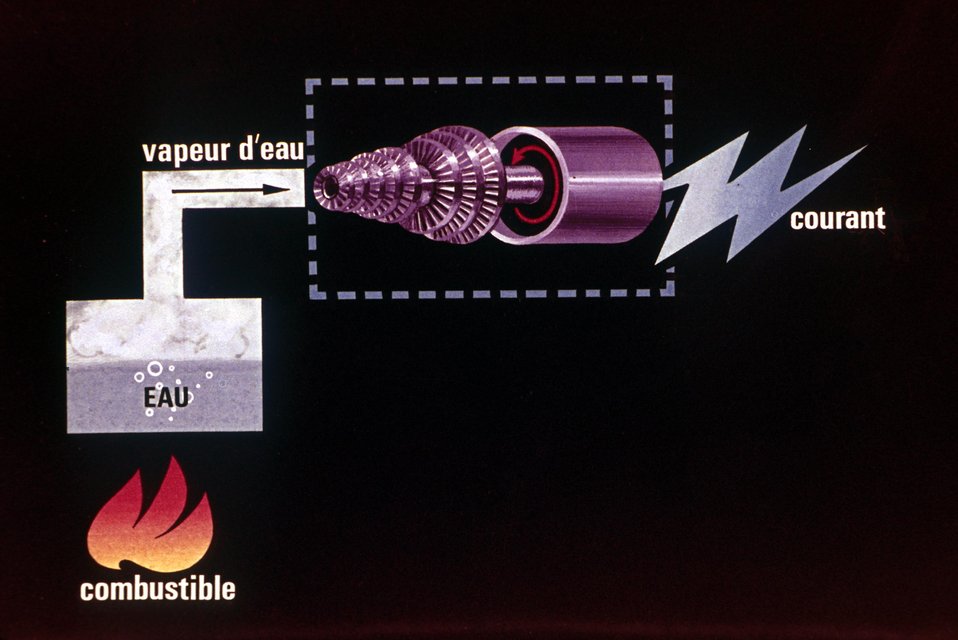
Comment fonctionne une centrale thermique?